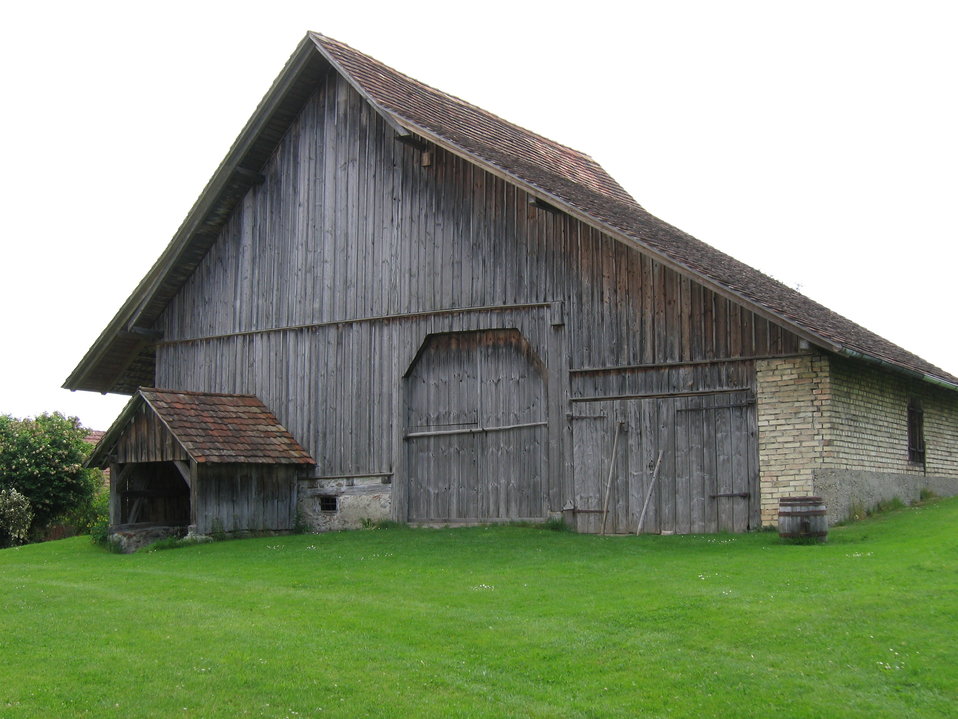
Deutsch: Kressbronn am Bodensee: Hofanlage Milz - Scheune